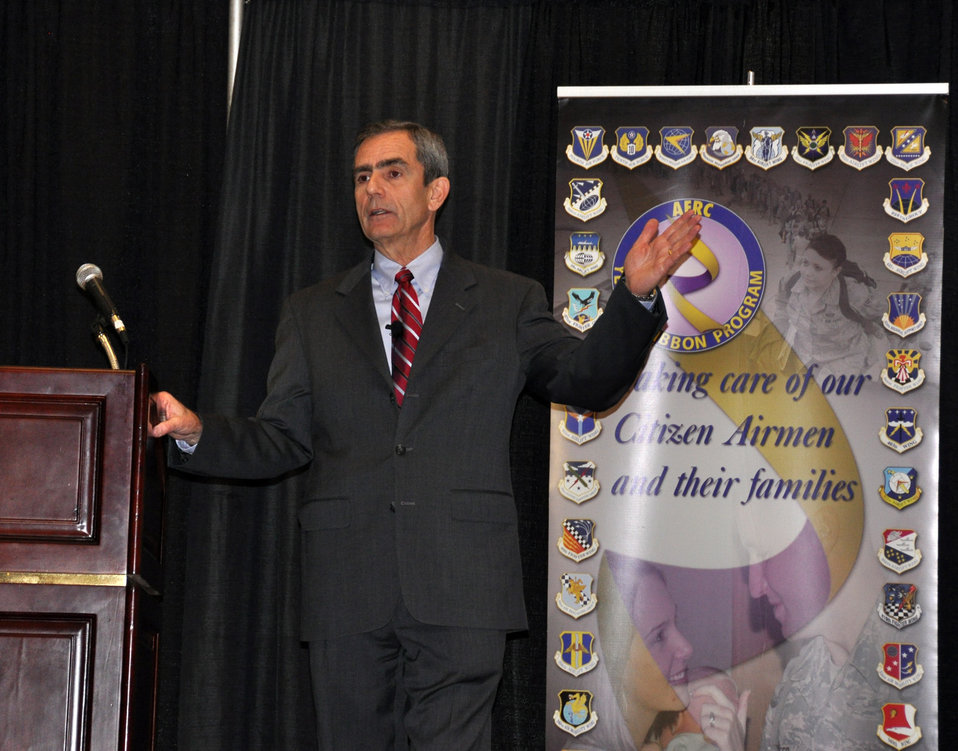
Former POW shares reintegration tips with reservists and their families

Retired Air Force Col. Lee Ellis shares his tips for reintegration with Air Force reservists and their family members at the Air Force Reserve Command Yellow Ribbon event in San Diego on Feb. 25, 2012. Ellis spent more than five years as a prisoner of war during the Vietnam War.